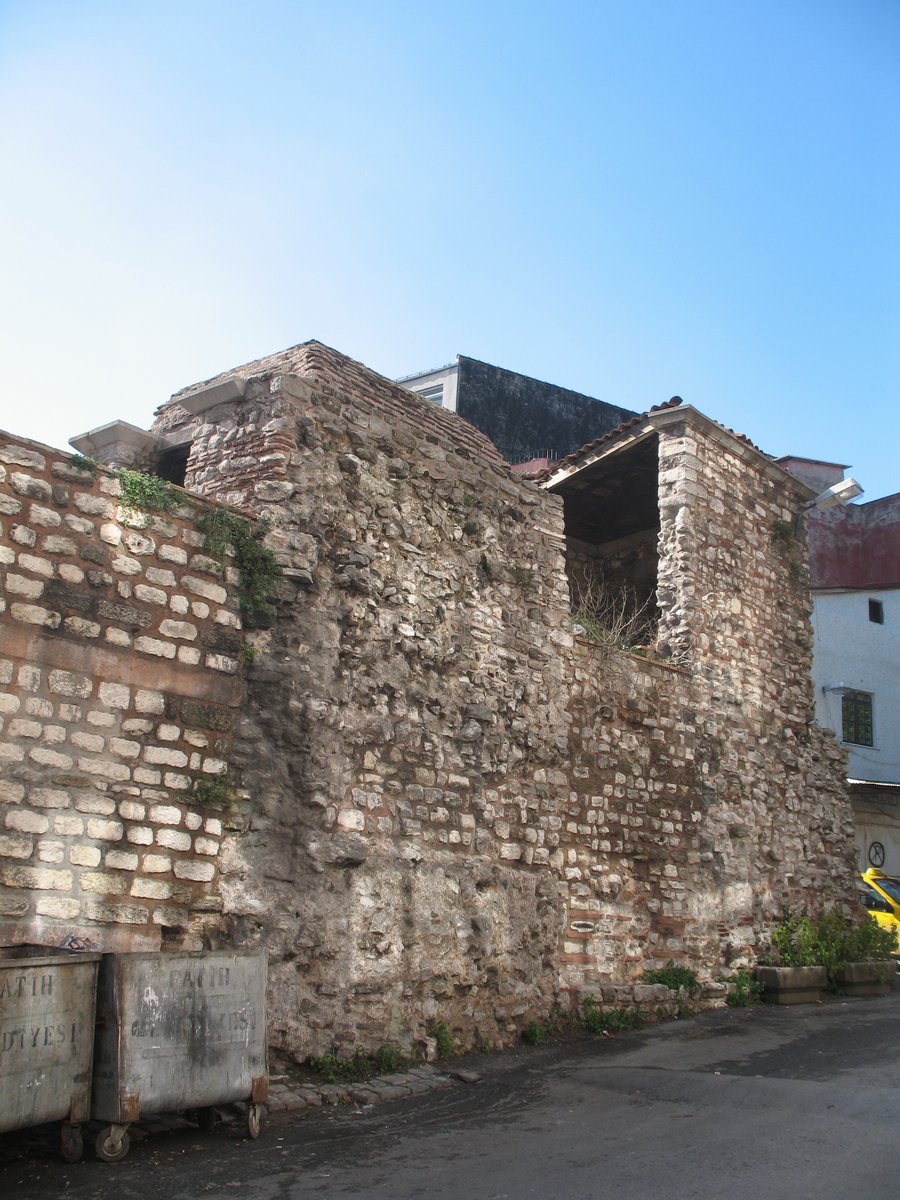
Val akv poc1